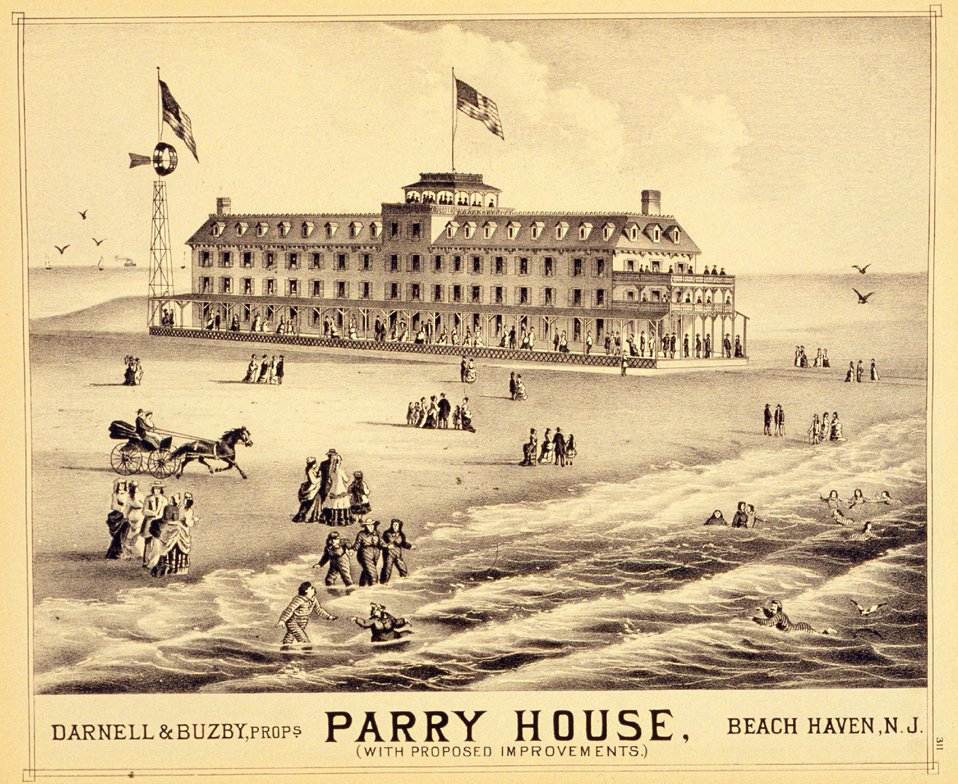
Parry House, Beach Haven, N.J. P. 311. 'Historical and Biographical Atlas of the New Jersey Coast,' by T. F. Rose, 1878.